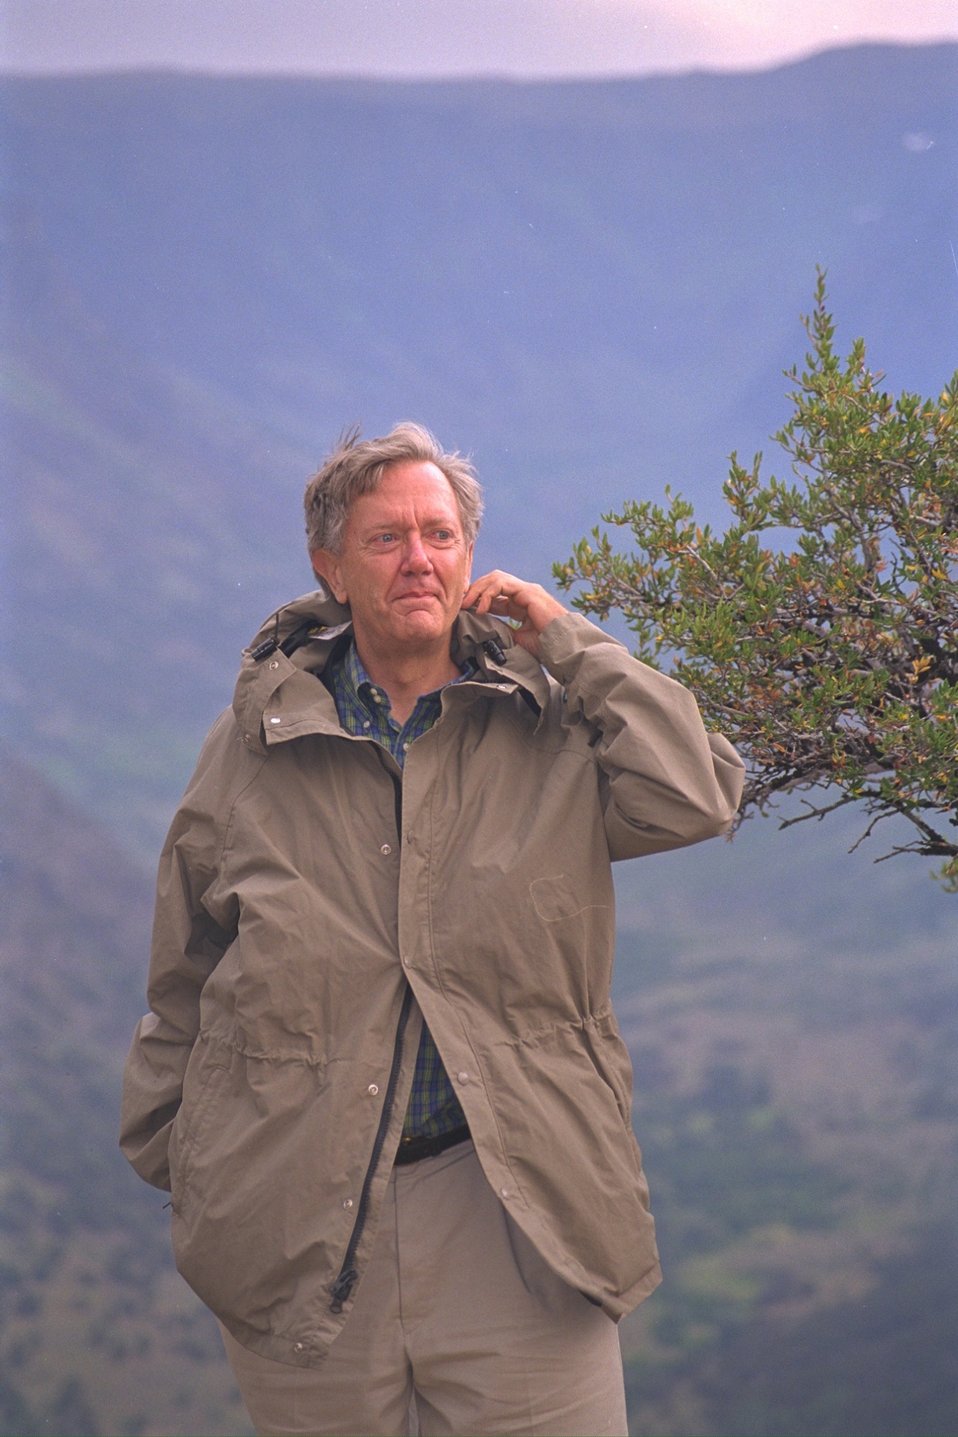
Secretary of the Interior Bruce Babbitt at Big Indian Gorge viewpoint on Steens Mountain.